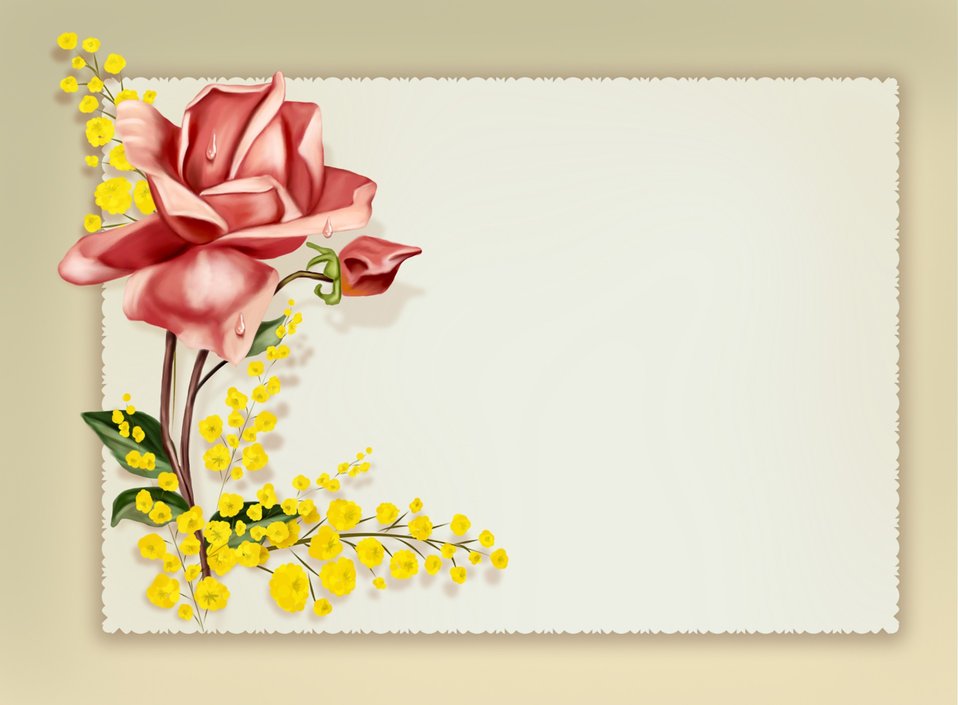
Card with flowers

Drawn card with rose and mimosa.